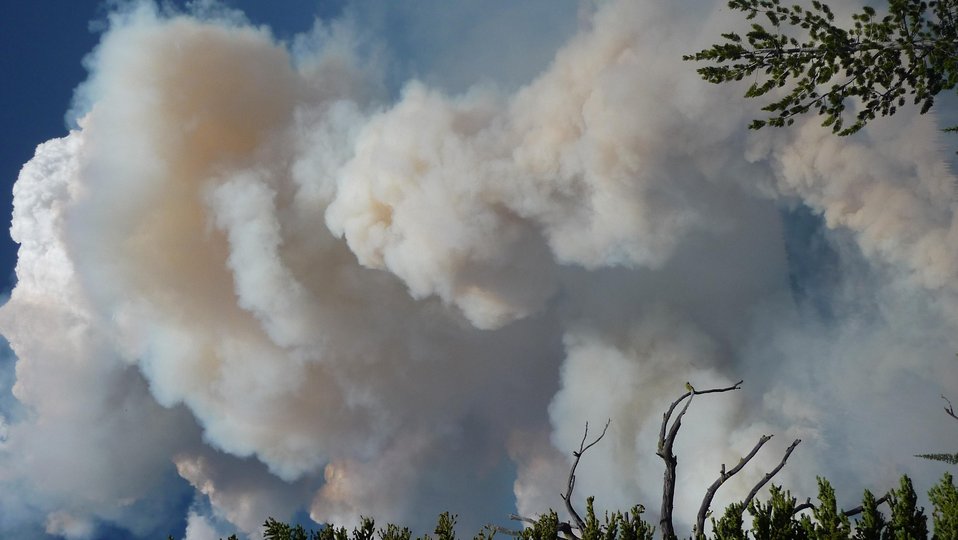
The Thunder City Fire in the Payette National Forest near Stibnite, ID began on Jul. 19, 2013 by lightning and has consumed approximately 1,520 acres and is approximately 15% contained.